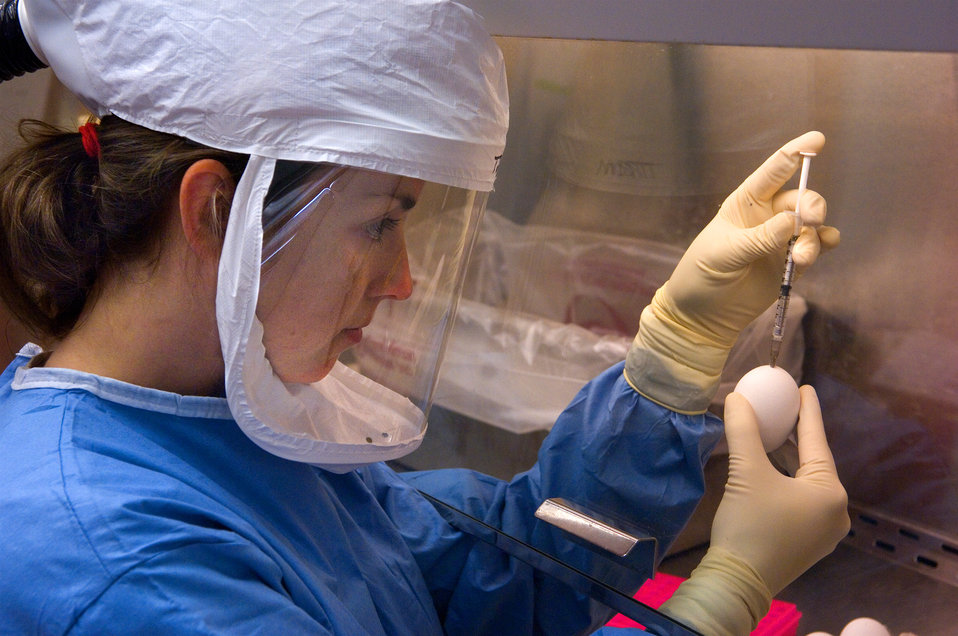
This photograph depicts a microbiologist in the Influenza Branch at the Centers for Disease Control and Prevention, while she was conducting an experiment inside a biological safety cabinet (BSC) within the Biosafety Level 3-enhanced laboratory. The airflow within the BSC helps prevent any airborne virus from escaping the confines of the cabinet, and as part of her personal protective equipment, she was wearing a powered air purifying respirator (PAPR), which was filtering the air that she was breathing.